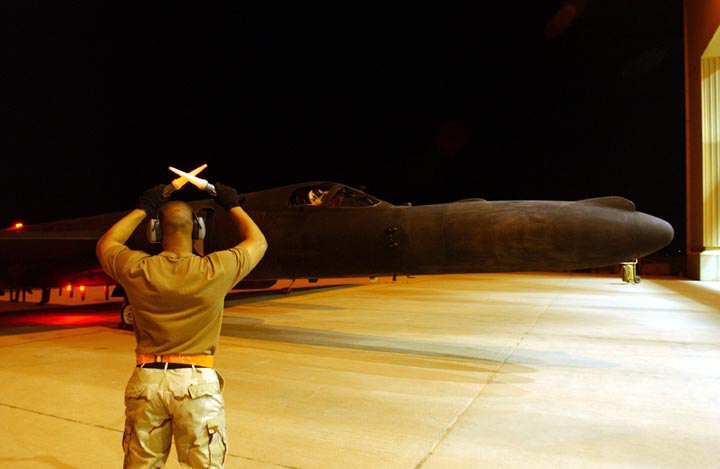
IRAQI FREEDOM

Master Sgt. Lamont Pollock, Crew Chief, 9th Aircraft Maintenance Squadron, 363rd Expeditionary Aircraft Maintenance Squadron, marshals a U-2R Dragon Lady aircraft in to position following a reconnaissance mission at a forward deployed location in Southwest Asia, during Operation IRAQI FREEDOM.